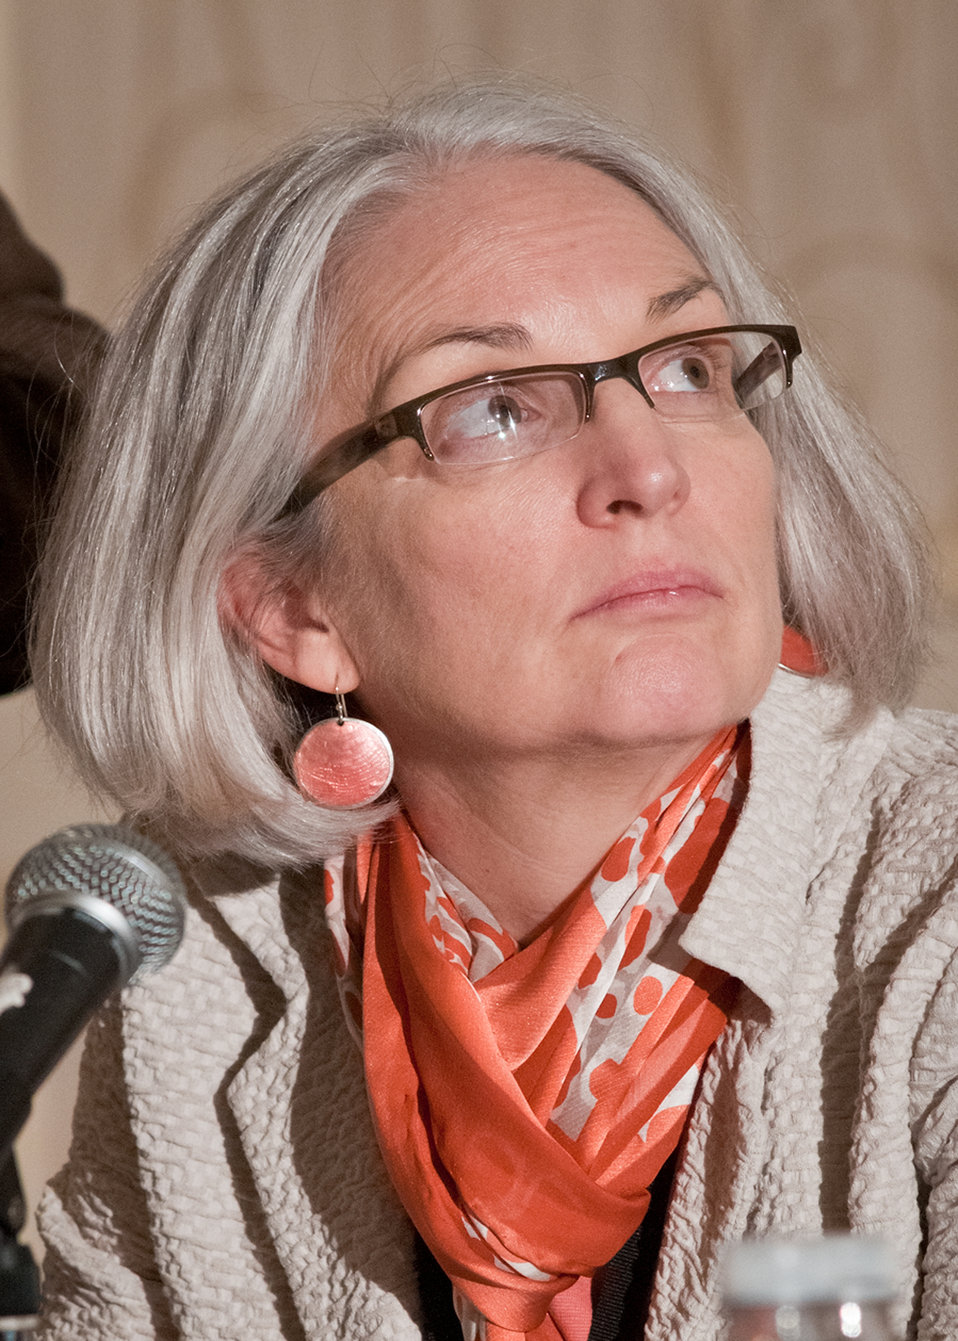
Ann Mills, Deputy Undersecretary, Natural Resources and Environment listens during a presentation at the “Balancing Financial Objectives and Environmental Concerns in Agriculture” session at the World Agricultural Outlook Board Forum in Crystal City, VA, on Thursday, February 24, 2011. The theme of this year’s World Agricultural Outlook Board Forum is, “Today’s Strategies and Tomorrow’s Opportunities.” The forum is an opportunity for the U.S. Department of Agriculture to learn as well as to inform. Dialog and feedback are critical to understanding the issues that are important to agriculture.